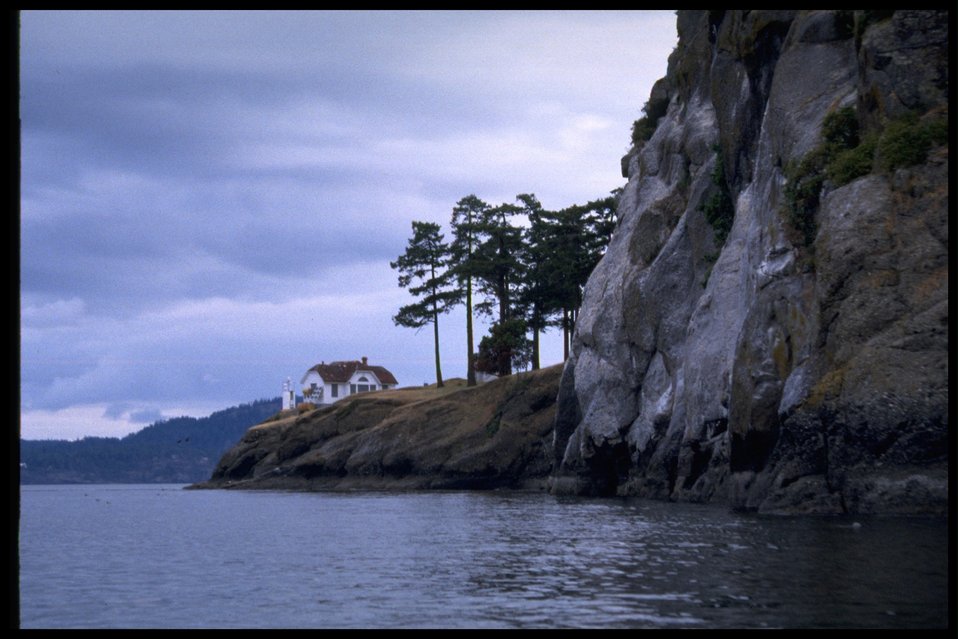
Turn Point from water with light station and buildings. Series of 17 photos.